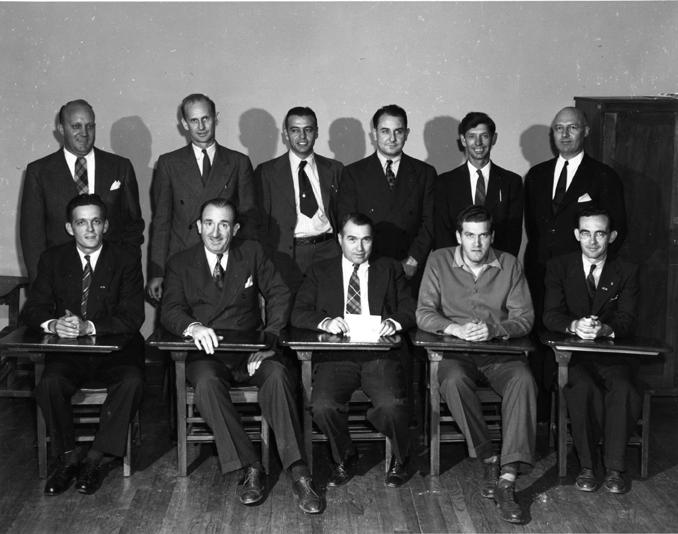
Meeting at Oak Ridge